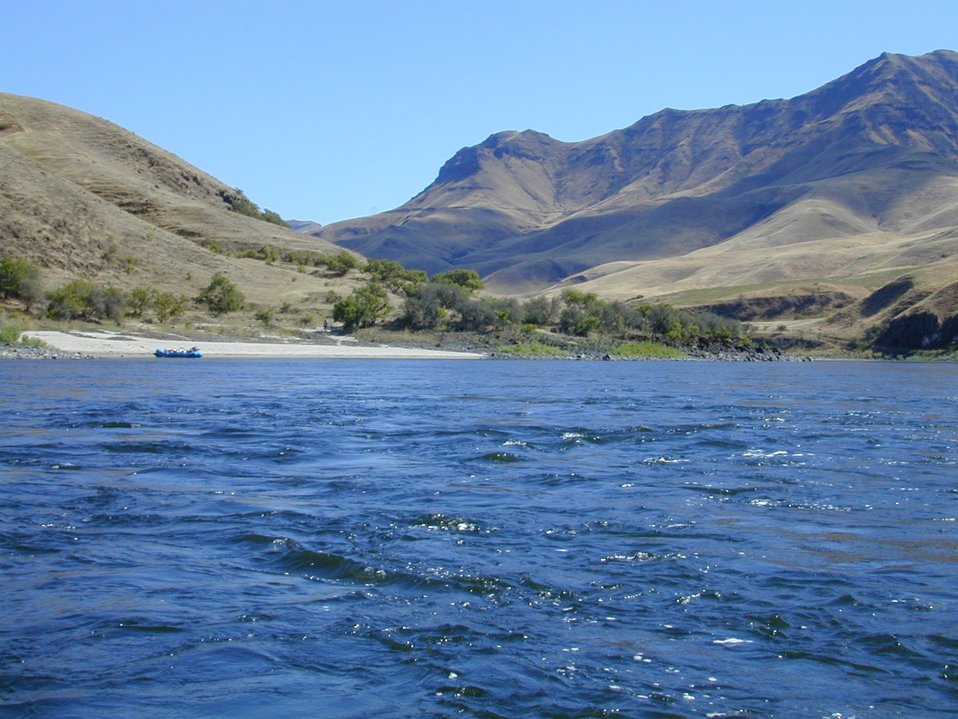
Scenic shot of Lower Salmon River Cottonwood Field Office UCSC Upper Columbia Salmon Clearwater District